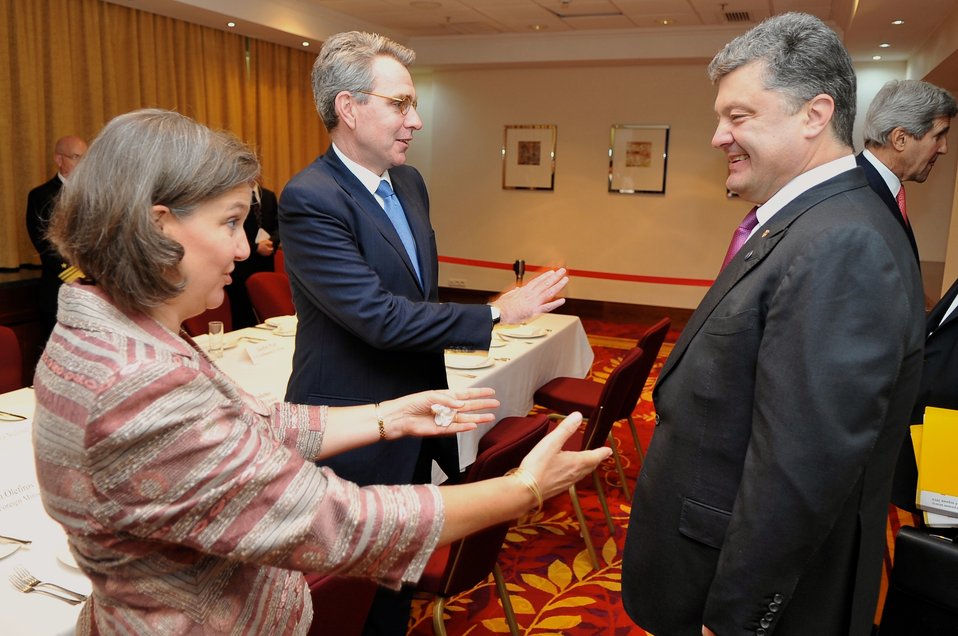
Assistant Secretary Nuland, Ambassador Pyatt Greet Ukrainian President-elect Poroshenko Before Meeting in Warsaw

U.S. Assistant Secretary of State for European and Eurasian Affairs Toria Nuland and U.S. Ambassador to Ukraine Geoffrey Pyatt greet Ukrainian President-elect Petro Poroshenko before he met with U.S. Secretary of State John Kerry in Warsaw, Poland, on June 4, 2014.